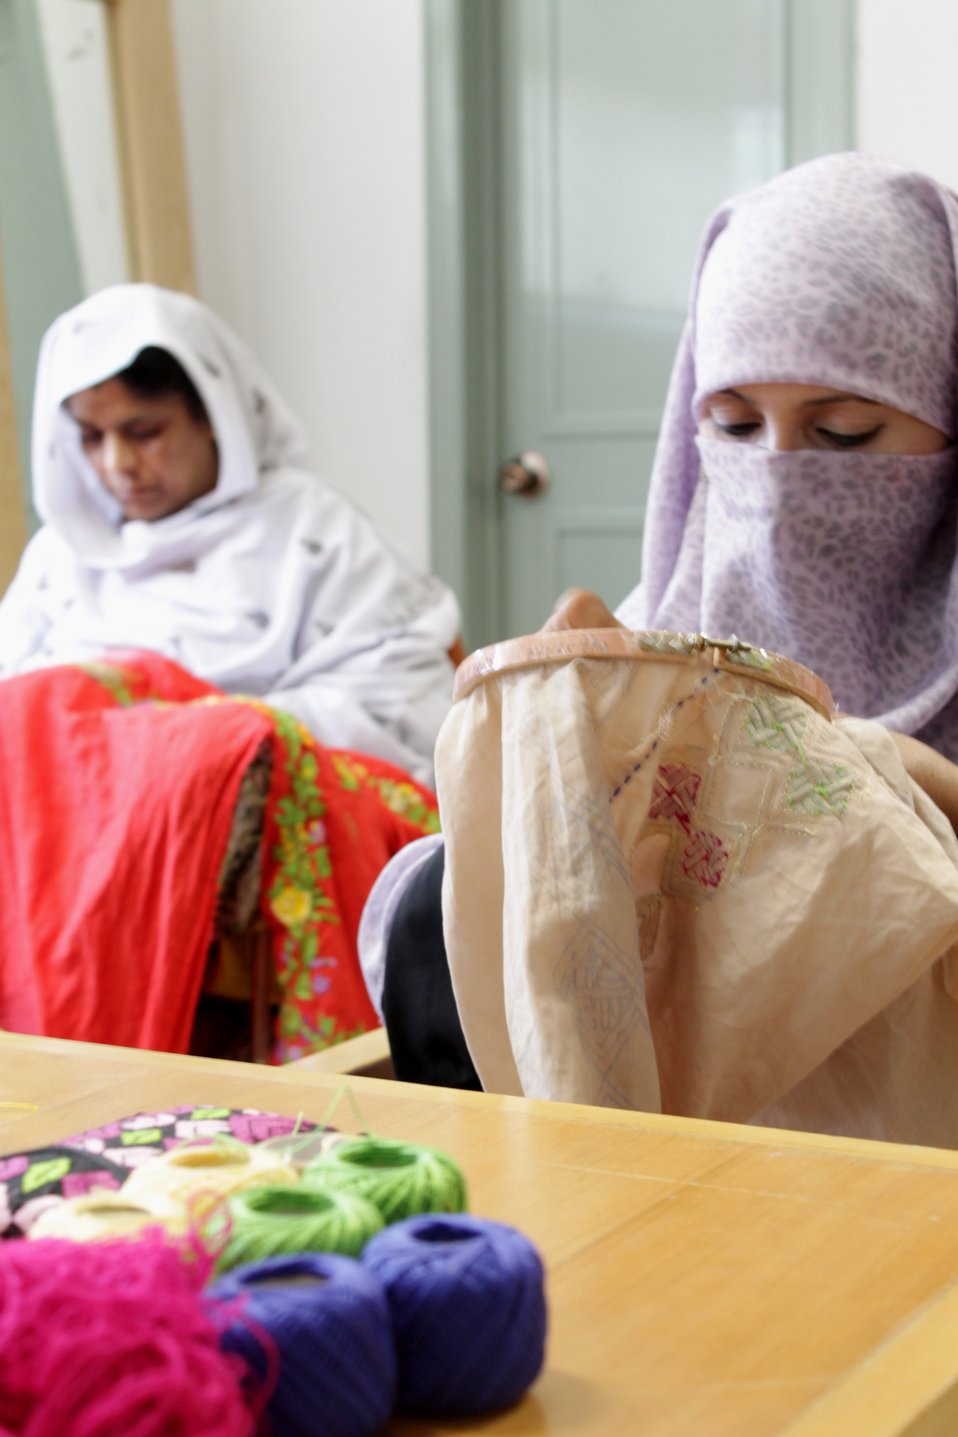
Out of the box

Lahore, May 4, 2012 - Entrepreneurs is successfully arranging exposure trips for women embellishers to bigger markets, whereby they get a chance to visit retail outlets, meet with buyers, observe urban trends and bring back with them a totally different experience which is reflective in their work